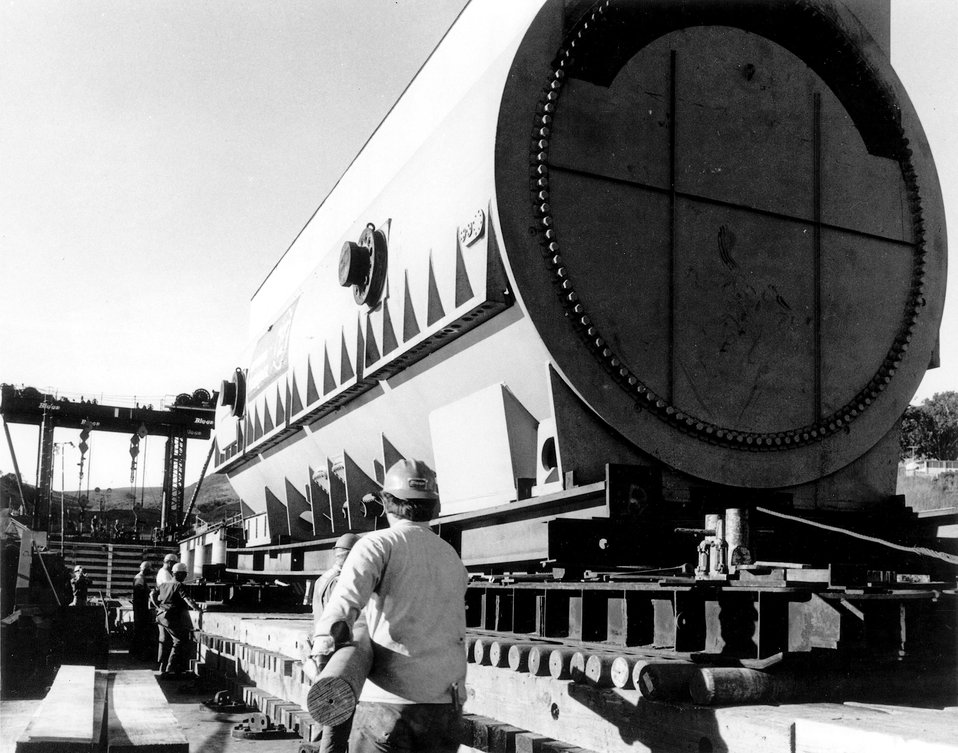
This giant piece of generating equipment, an electrical generator stator, will help save up to a million barrels of oil a month when it is installed at Pacific Gas & Electric Co.'s Diablo Canyon nuclear power plant. Circa 1974.